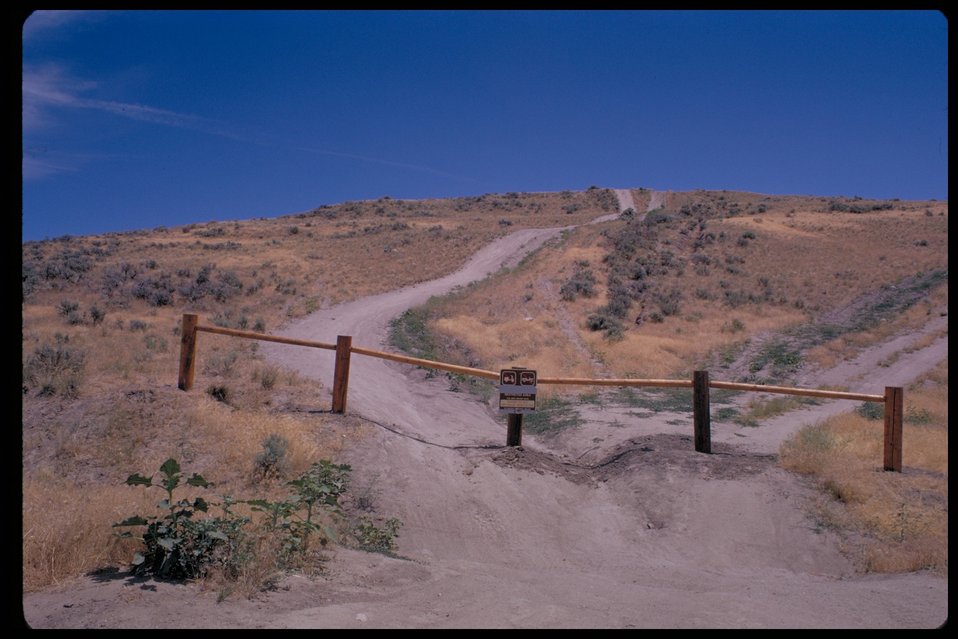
Off Road Vehicle barricade Boise Front OHV Off Highway Vehicles Four Rivers Field Office LSRD Lower Snake River District